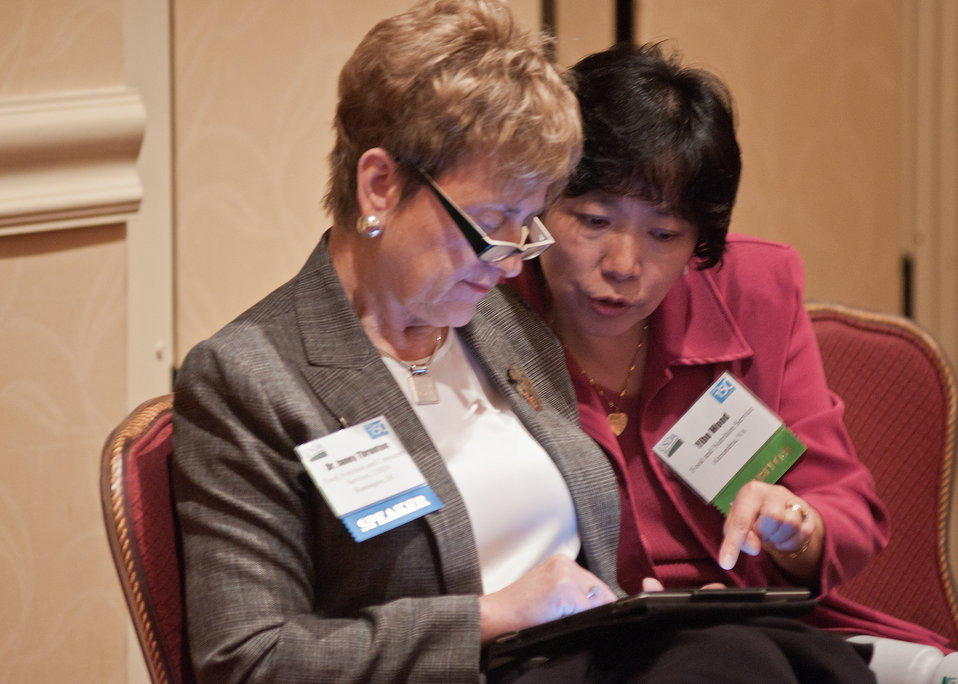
Janey Thornton, Deputy Under Secretary, Food, Nutrition and Consumer Services and Dr. Yibo Wood, Global Coordinator, Food and Nutrition Service review speaking points prior to Secretary Thornton speaking at the Global Food Security afternoon breakout session at the 2012 Agricultural Outlook Forum, “Moving Agriculture Forward, Growing, Innovating and Celebrating 150 Years” held at the Crystal gateway Marriott Hotel Arlington, Virginia, Friday, February 24, 2012. The session discussed and reviewed challenges associated with feeding a growing world population with a currently strained resource base.